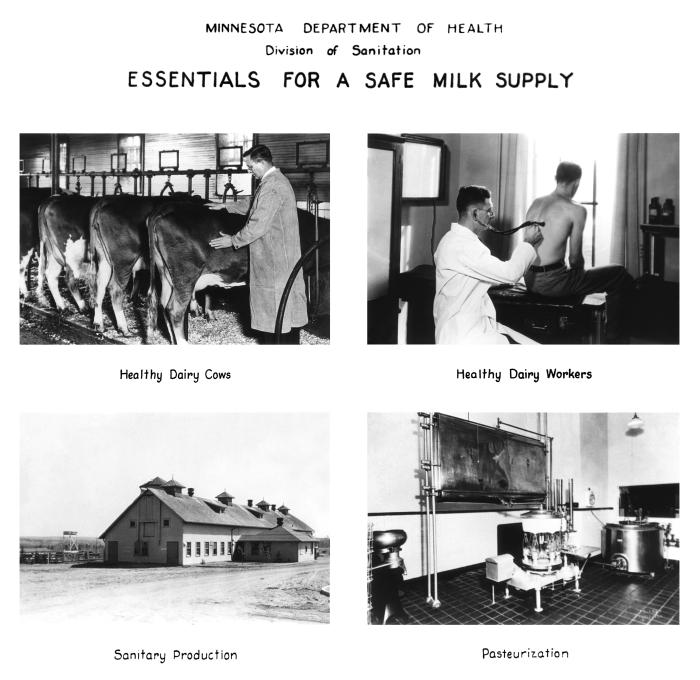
These 1934 historic images were included in an instructional flyer outlining the essential protocols necessary to the maintenance of a safe milk supply such as healthy dairy cows, healthy dairy workers, sanitary production, and pasteurization. It also emphasizeed the role of the Minnesota Health Department in assuring this safety.